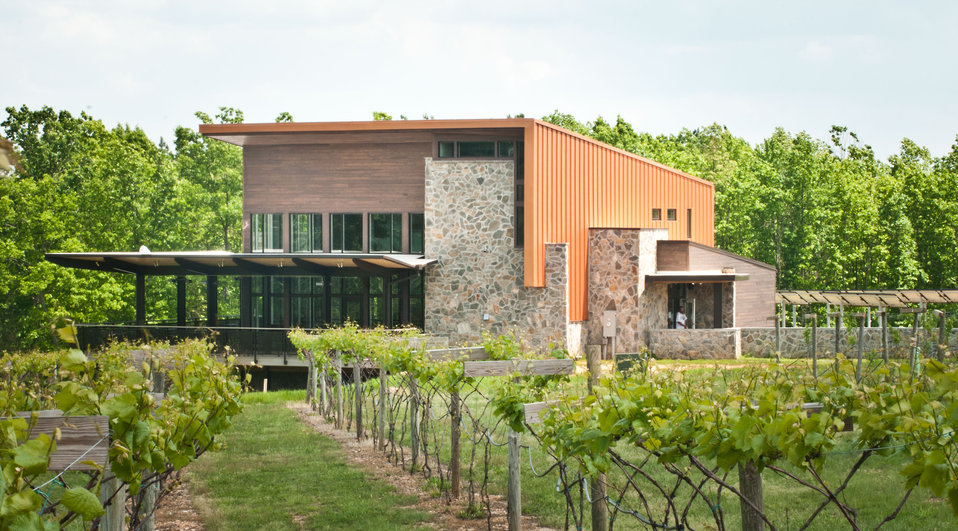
Grape vines and photovoltaic panels (r.) rely on the sun at Cooper Vineyards in Louisa, VA, the first winery on the East Coast and the second in the country to be awarded the fourth and highest, Platinum certification by Leadership in Energy and Environmental Design (LEED).
From a Virginia Wine Board Marketing Office press release, “The process of building a LEED platinum certified building was initially more expensive and arduous than co-owners, Jacque Hogge, MD and Geoffrey Cooper, MD expected, but they were able to get financial assistance from the United States Department of Agriculture. “Know that there are grants available to help with the costs of sustainable building projects,” Hogge advises to other potential green wineries. Cooper Vineyards received 2 of the 3 USDA (U.S. Department of Agriculture Rural Development (RD) Rural Energy Financing program) grants awarded in Virginia in 2010 to help with the expenses of their construction.”
Rural Energy Financing program focuses on loan guarantees, loans and grants to agricultural producers, businesses, cooperatives and rural residents for renewable energy systems and to make energy efficiency improvements.
The tasting room and building collects rainwater from the roof; uses low flow water fixtures to reduce usage by 40%; utilizes structurally insulated panels for the roof and walls; heats and cools the entire building using a geothermal system that includes pipes that are embedded in the parking lot; low-voltage LED lighting with daylight and occupancy sensors provide ample light when it is needed; a solar panel array provides more than 15% of the energy needs for the building, and much of the construction materials are from local and recycled material sources. For more information about USDA please go to www.usda.gov, Rural Development and Rural Energy Financing. LEED was developed by the U.S. Green Building Council (USGBC) is a 501 c3 non-profit organization committed to a prosperous and sustainable future for our nation through cost-efficient and energy-saving green buildings.